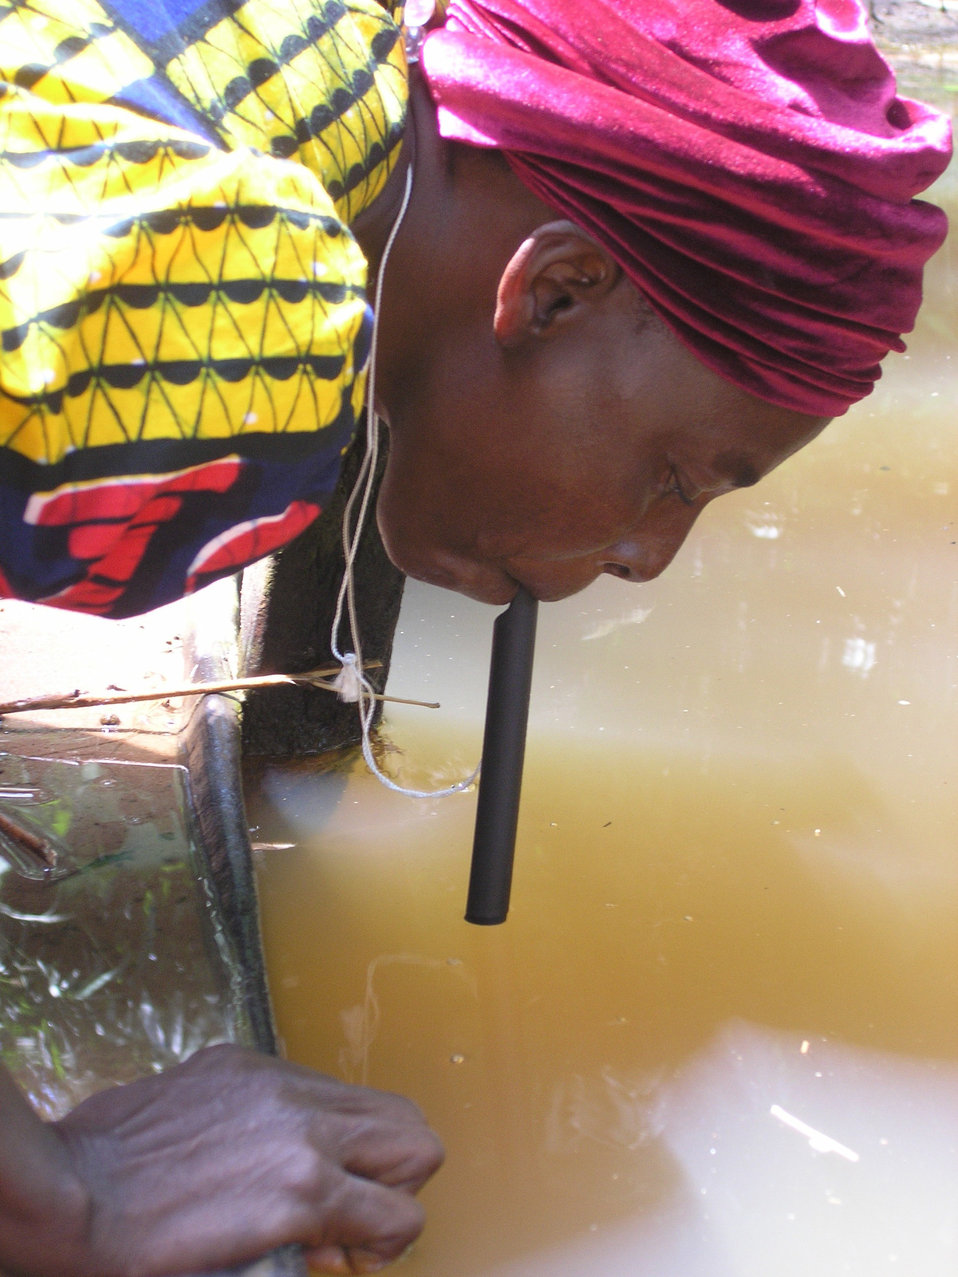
This 2002 image depicts a Nigerian woman drinking water directly from a local pond through a pipe filter. Similar to a straw, pipe filters are individual filtration devices, which allow people to filter their drinking water, in order to avoid contracting Guinea worm disease while traveling or working in the field. To prevent possible infection, all drinking water must be filtered in endemic areas to remove the microscopic copepods, or 'water fleas' that carry the infective Guinea worm larvae.